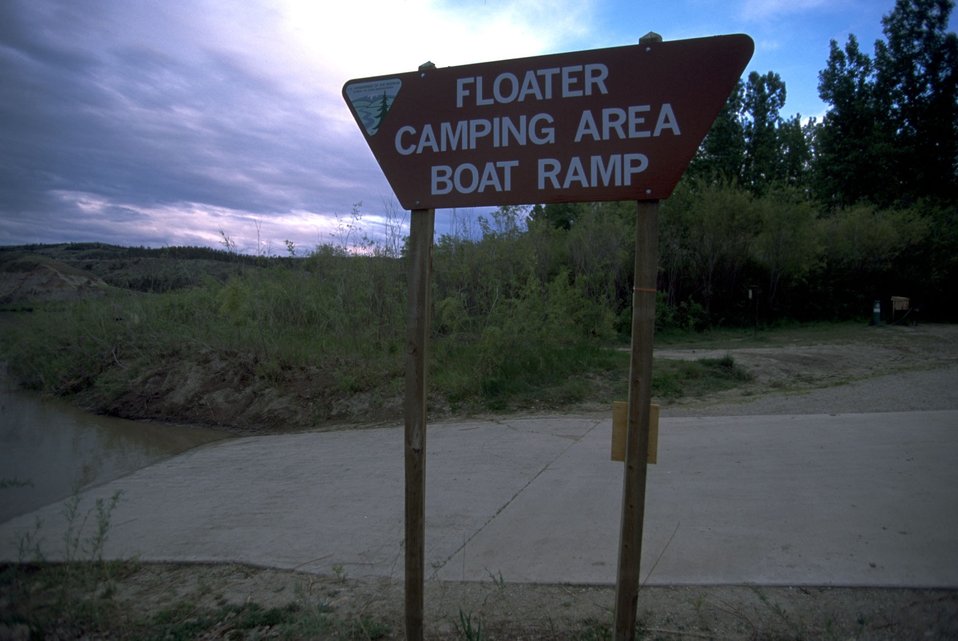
Information sign at Kipp Recreation Site